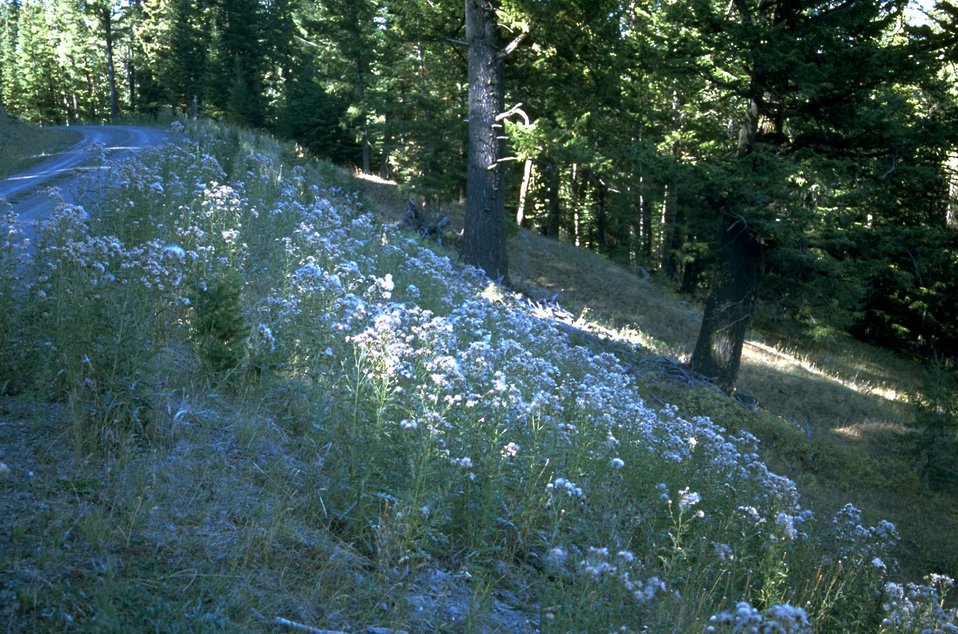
Wild flowers on road fill in forested setting